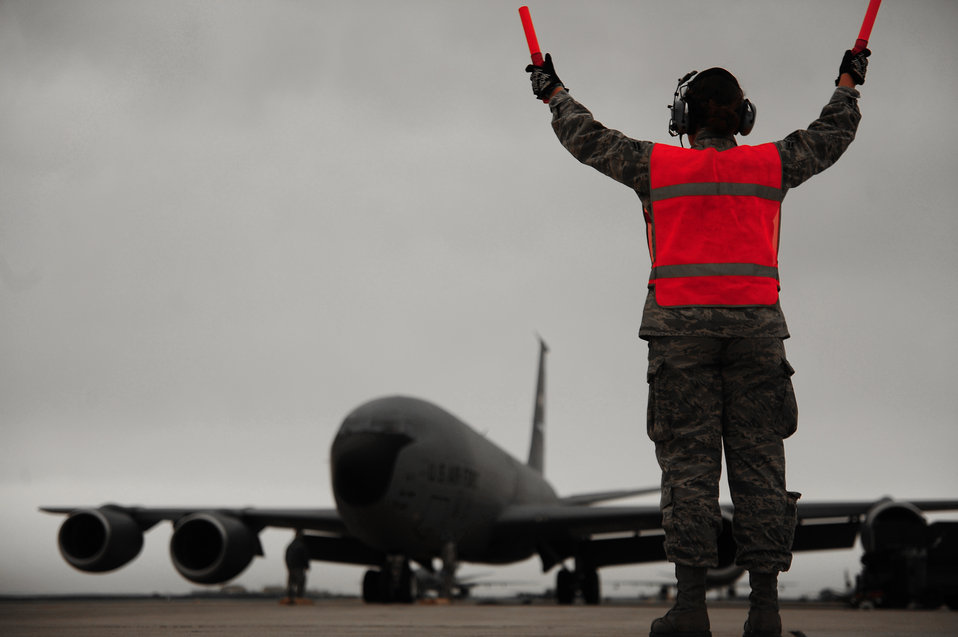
Teamwork essential to safely recovering aircraft

Airman 1st Class Jessica Haig marshals in a KC-135 Stratotanker on April 5, 2011, at an air base in Western Europe. The KC-135 returned from a refueling mission supporting Operation Unified Protector. The 313th Air Refueling Wing supports Operation Unified Protector, a NATO-led mission in Libya to protect civilian and civilian-populated areas under threat of attack. The 313th AEW provides aerial refueling to U.S. and coalition aircraft with KC-135 Stratotankers and KC-10 Extenders.